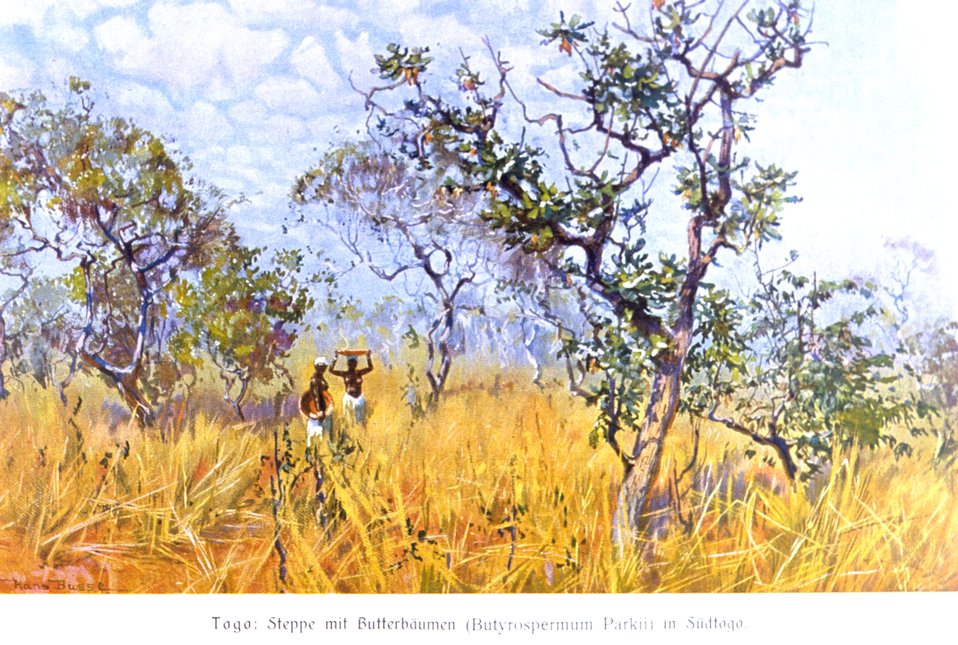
African butter tree, Butyrospermum Parkii, in the steppe of south Togo, Africa. In: 'Das Deutsche Kolonialreich,' by Hans Meyer, 1909. Vol II, p. 102. Library Call Number: Cfd M612 d